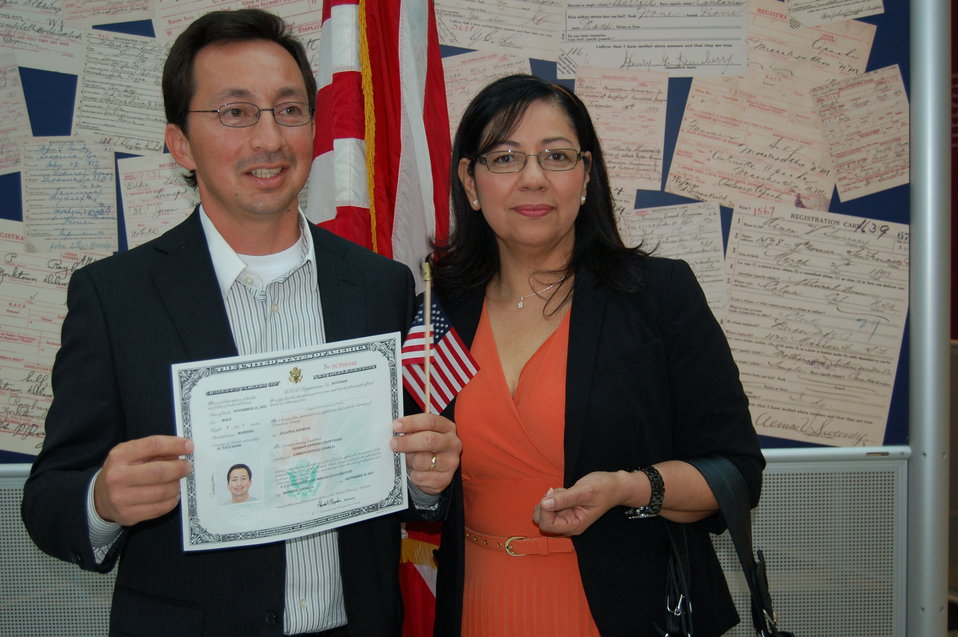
New Citizens